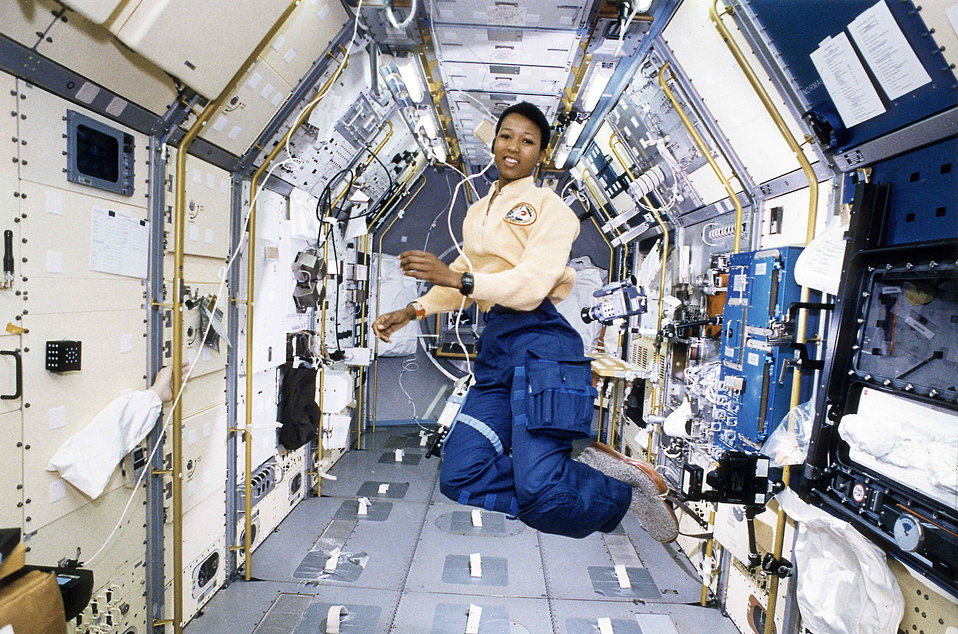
Dr. Mae Jemison was the first African-American woman in space